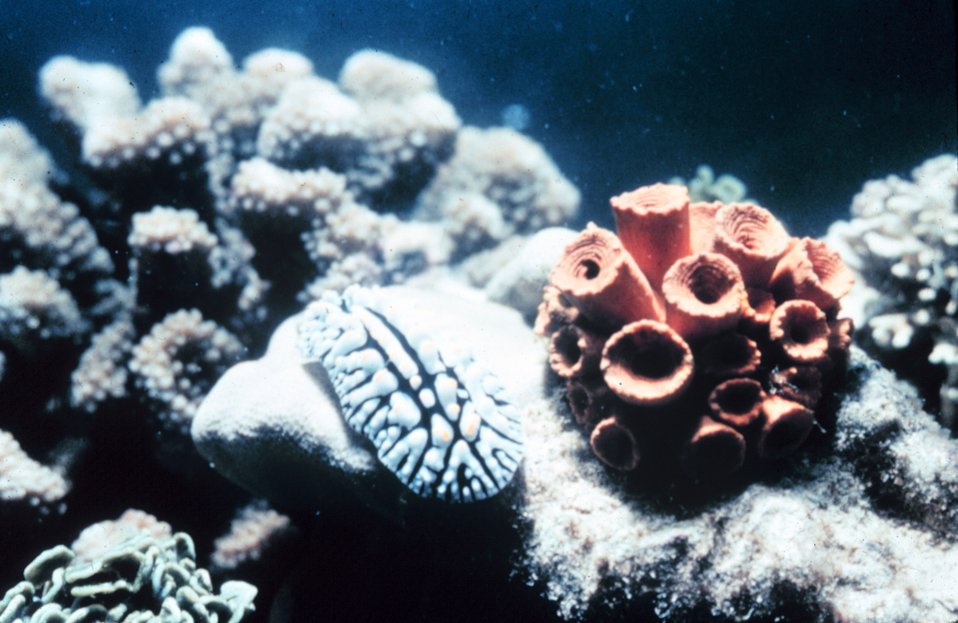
Nudibranch and coral